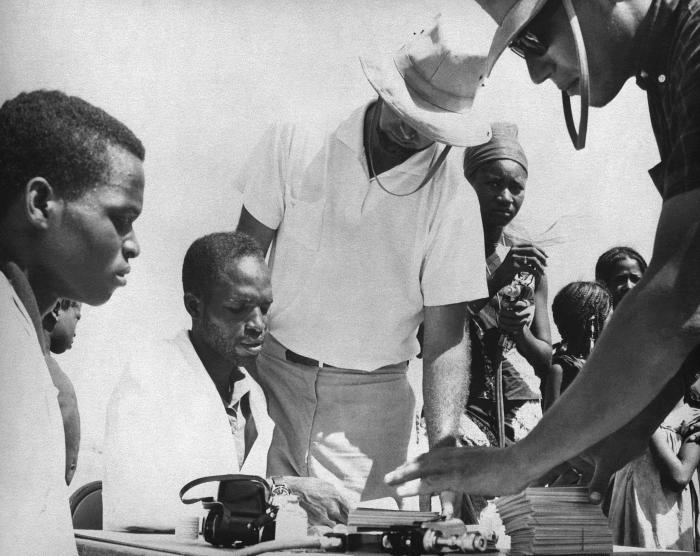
This was Don Moore, M.D., a member of the Smallpox Eradication Prospection Team participating in Niger Field Activities.